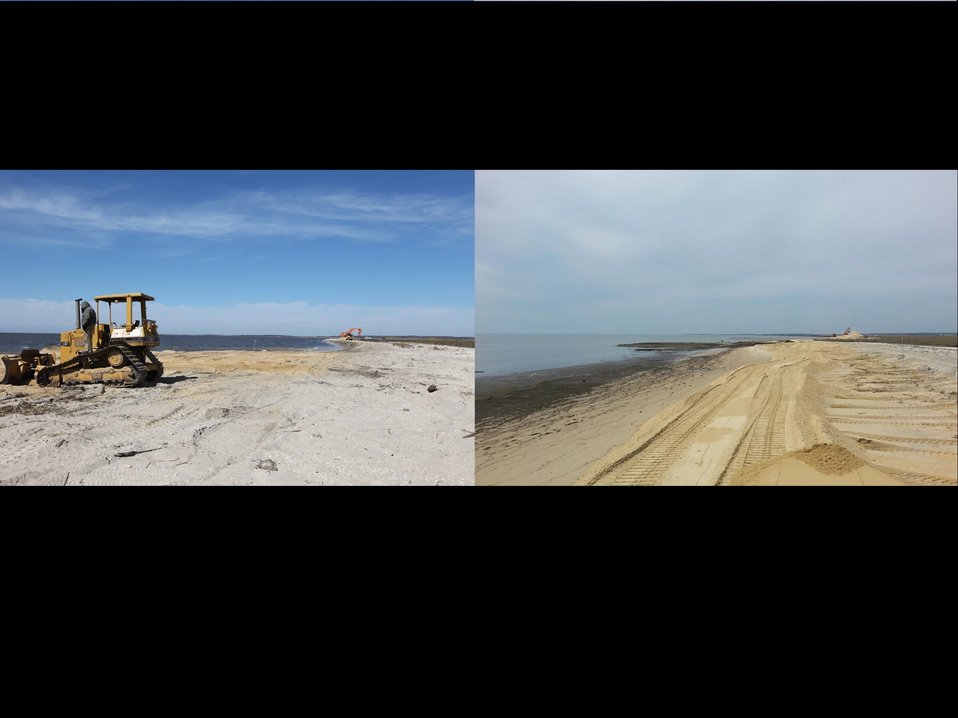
MooresBeach-Before-After

Before and after: One of several post-Hurricane Sandy beach restorations on the Delaware Bay. Credits: Tom Sturm/USFWS; Dianne Daly/American Littoral Society